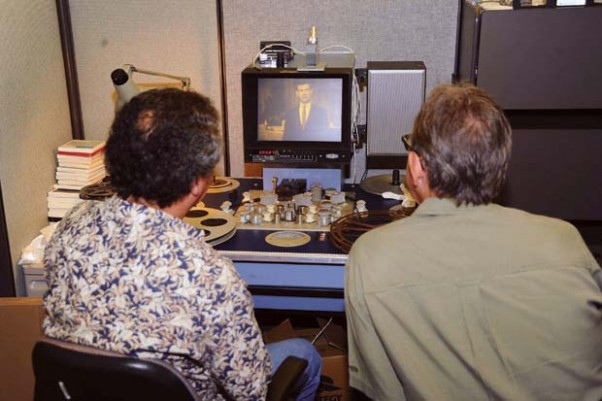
Heritage

Pedro Loureiro, Ph.D. (left), Archivist at the Defense Imagery Management Operations Center (DIMOC) and Jeff Sotzing, Chief Executive Officer at Carson Entertainment Group, review a 1963 film of The Tonight Show Starring Johnny Carson that was once thought lost, but was found earlier this year. DIMOC turned over the film to Sotzing to be added to the Carson archives.